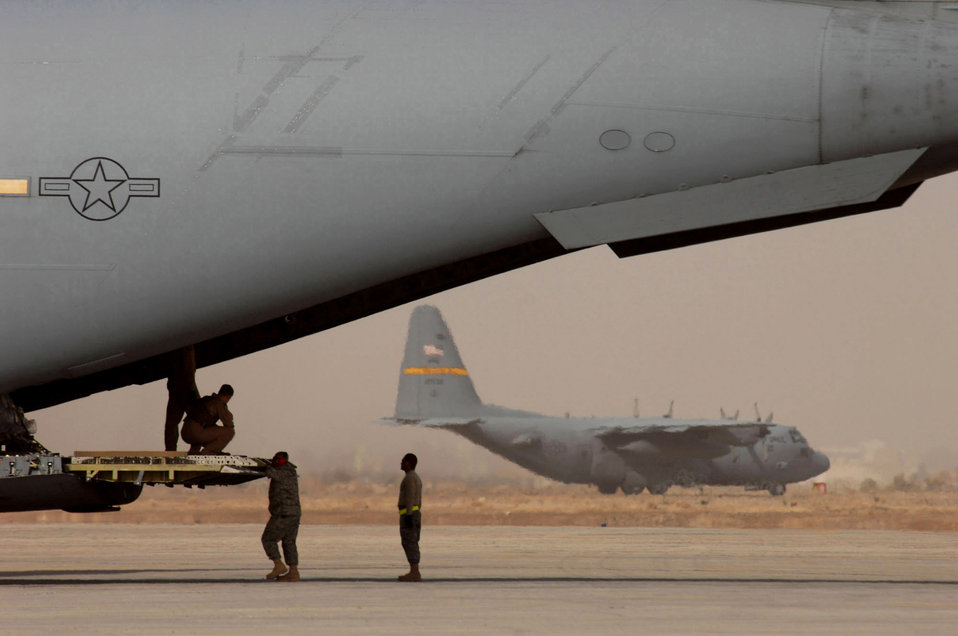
Now boarding

Airmen wait for a pallet of equipment to load on a C-17 Globemaster III Jan. 30 at Sather Air Base, Iraq. Sather AB is located on the west side of Baghdad International Airport and base Airmen move 6,200 passengers weekly and more than 1,700 tons of cargo weekly.